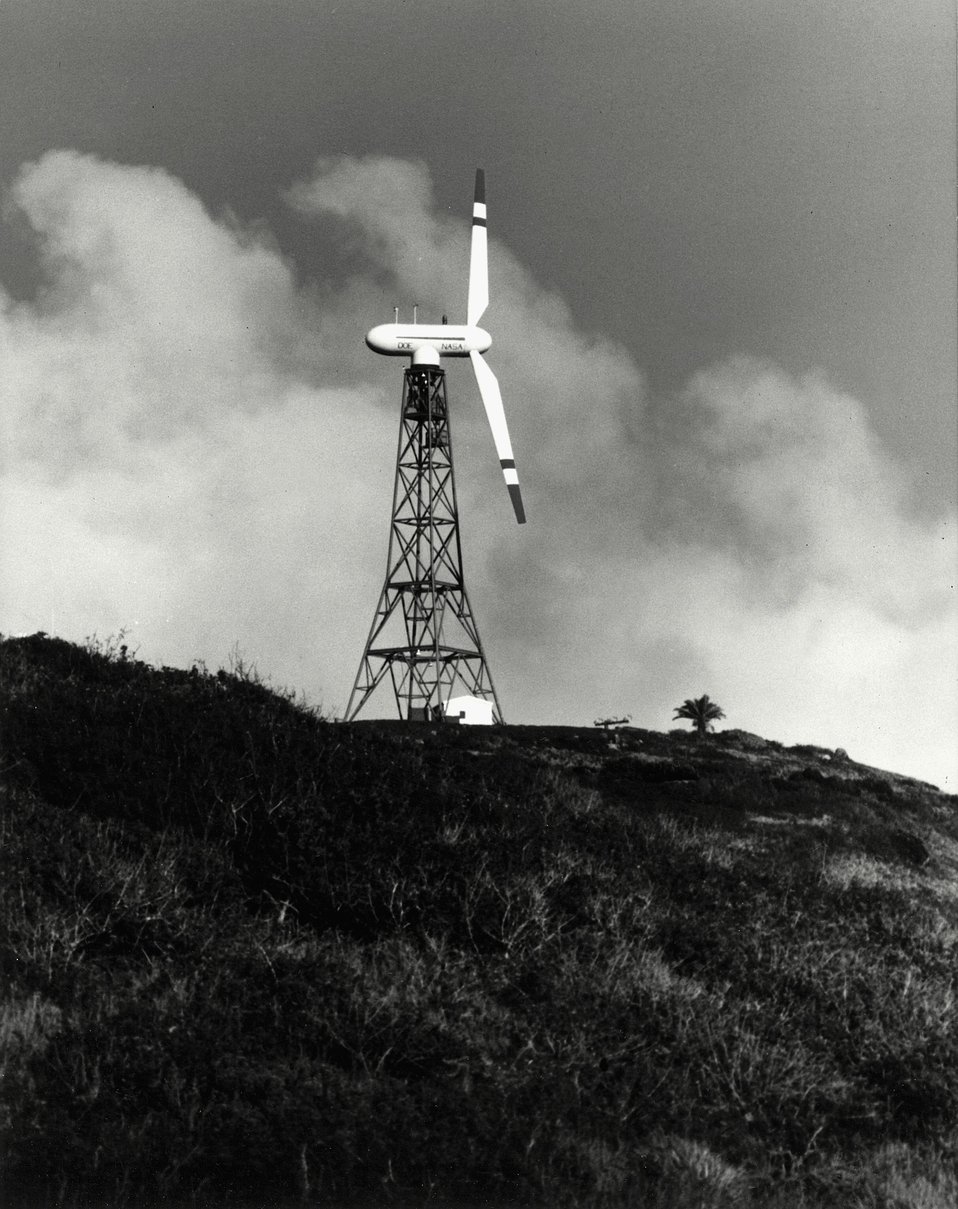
The ocean breezes off the north shore of Oahu, Hawaii, known for producing giant waves for the world's best surfing, now will be captured and converted into electricity. c. 1980